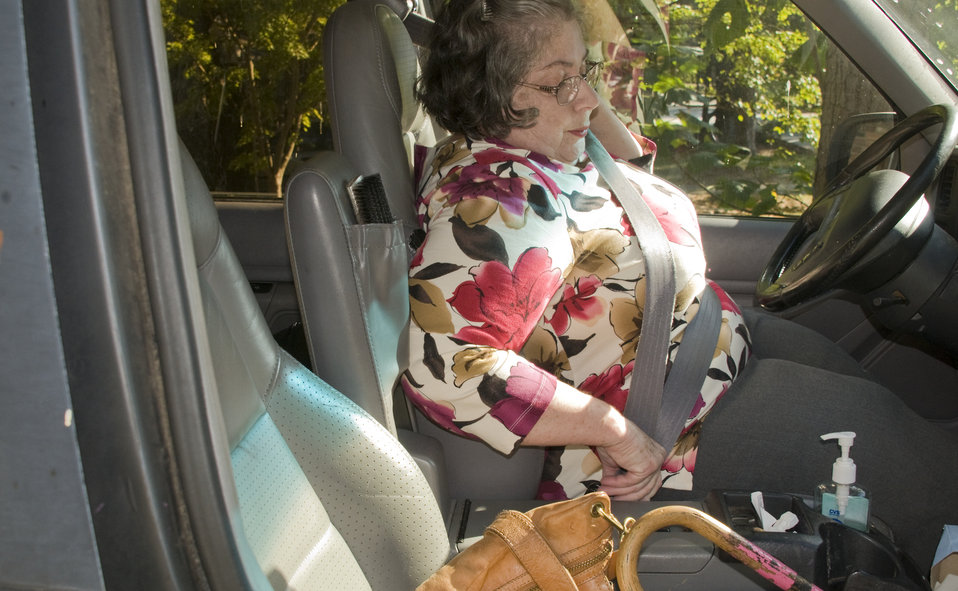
Finally, after having loaded her luggage into her vehicle's back seat area, this woman, who is a rheumatoid arthritis patient, had entered the automobile, and had settled herself in the driver's seat. She'd placed her walking cane and handbag on the console, which also contained a pump bottle of hand sanitizer. In this particular image, she was in the process of securing, and adjusting her safety belt.